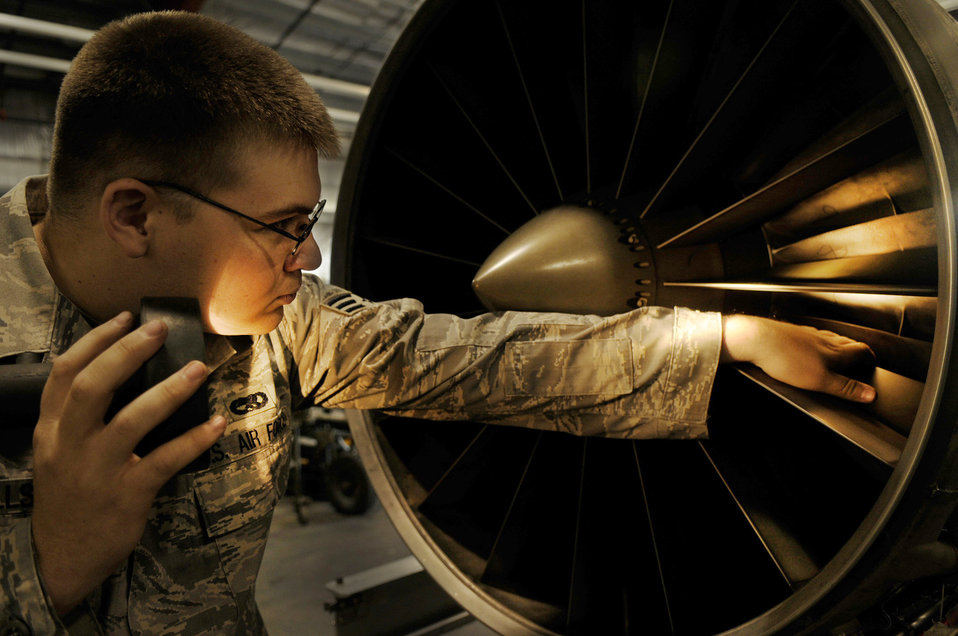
Shine a light...

Senior Airman William Hills performs an inlet inspection on an F-16 Fighting Falcon jet engine Aug. 12 at Eielson Air Force Base, Alaska. The check is performed during a routine maintenance assessment to look for nicks or foreign object damage to the blades. Airman Hills is an air space propulsions jet mechanic assigned to the 354th Maintenance Squadron.